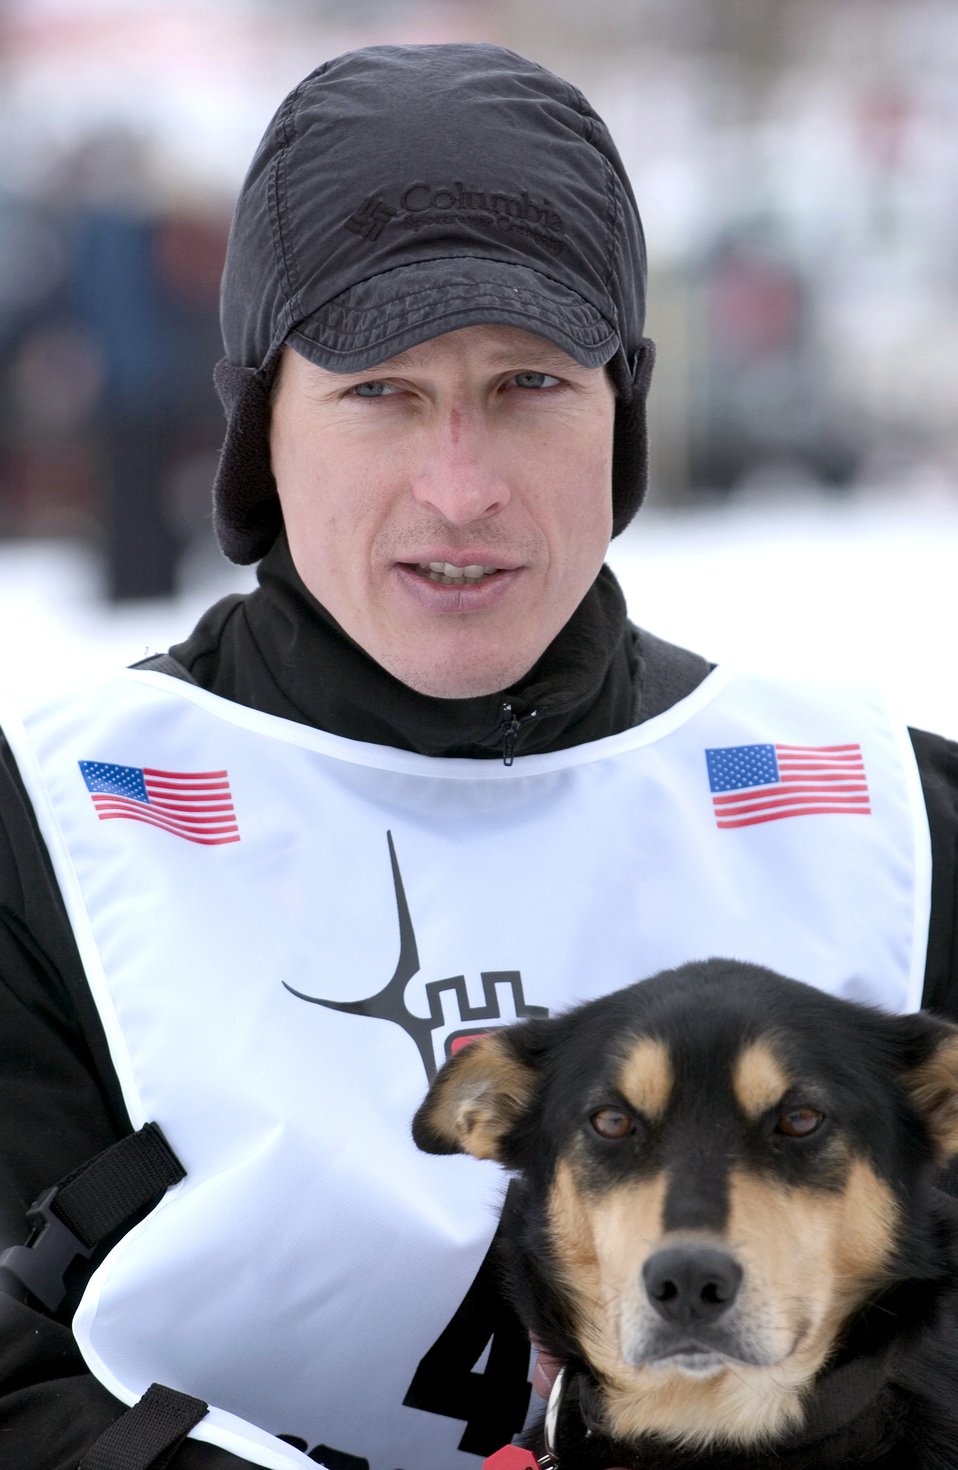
2006 Iditarod

Major (Dr.) Thomas Knolmayer posses with Hanuta, one of the leaders on his Iditarod sled dog team in Willow, Alaska. The race started Sunday, March 5, 2006 in Anchorage, Alaska, and Dr. Knolmayer expects to take 11 to 14 days to cover the 1,150 miles, roughly the distance from New York City to Orlando, Fla. Dr. Knolmayer is the chief of surgery at Elmendorf Air Force Base, Alaska's 3rd Medical Group and is starting his second Iditarod after becoming the first active-duty servicemember to ever finish the race last year.